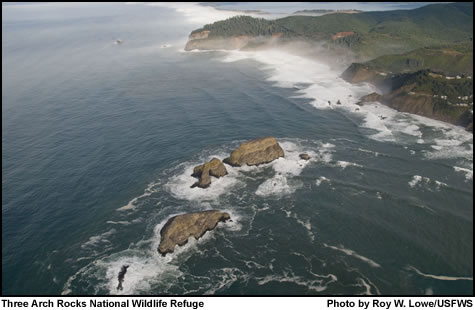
Three Arch Rocks

An aerial view of Three Arch Rocks National Wildlife Refuge along the northern Oregon Coast.